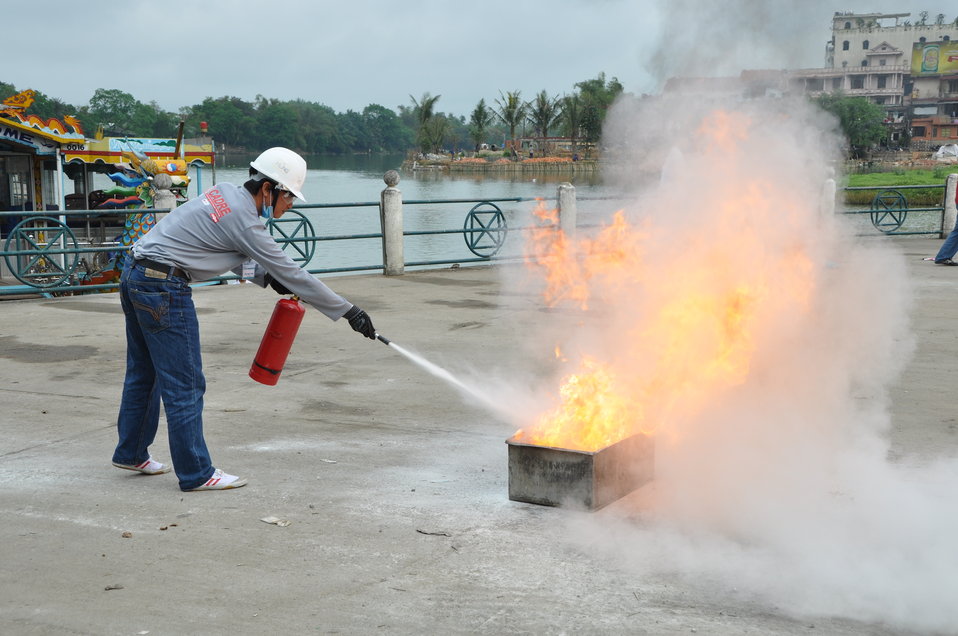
Disaster and Emergency Training Funded by USAID in Hue, Vietnam